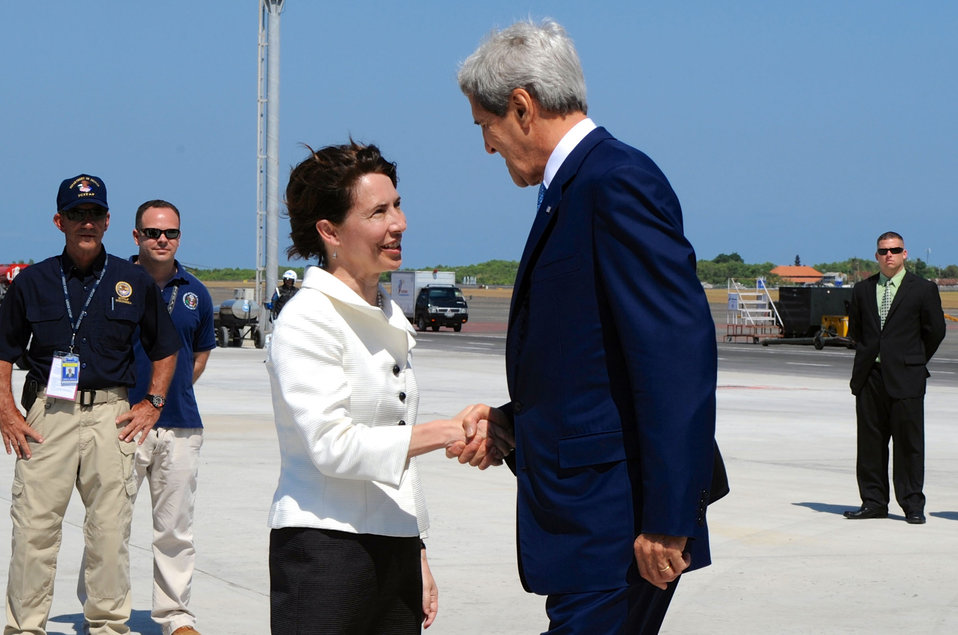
Secretary Kerry Is Greeted By Embassy Jakarta's Charge d'Affaires Bauer

U.S. Secretary of State John Kerry is greeted by Embassy Jakarta's Charge d'Affaires Kristen Bauer upon arriving in Bali, Indonesia, on October 4, 2013, to attend the Asia-Pacific Economic Cooperation Ministerial Meeting.